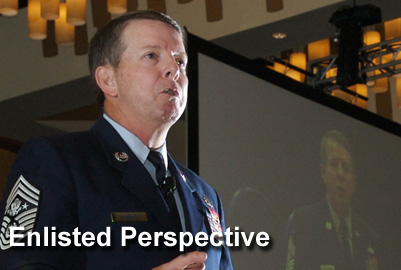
Chief McKinley sends last 'Perspective'

In his last